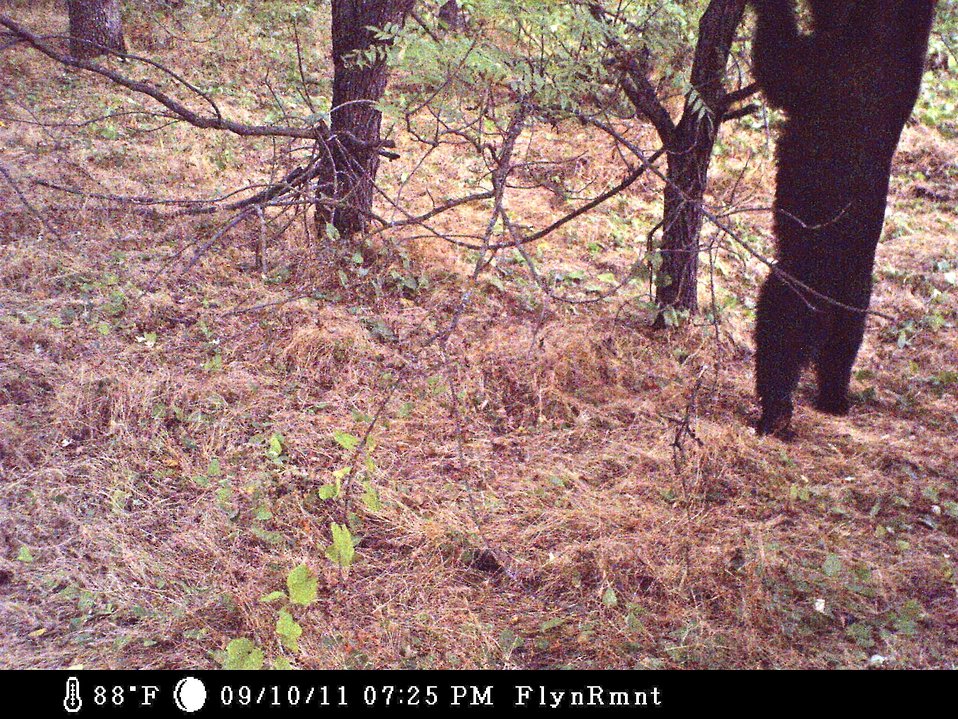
anything good up there?

black bear
trail camera photo
Sacramento River National Wildlife Refuge, CA